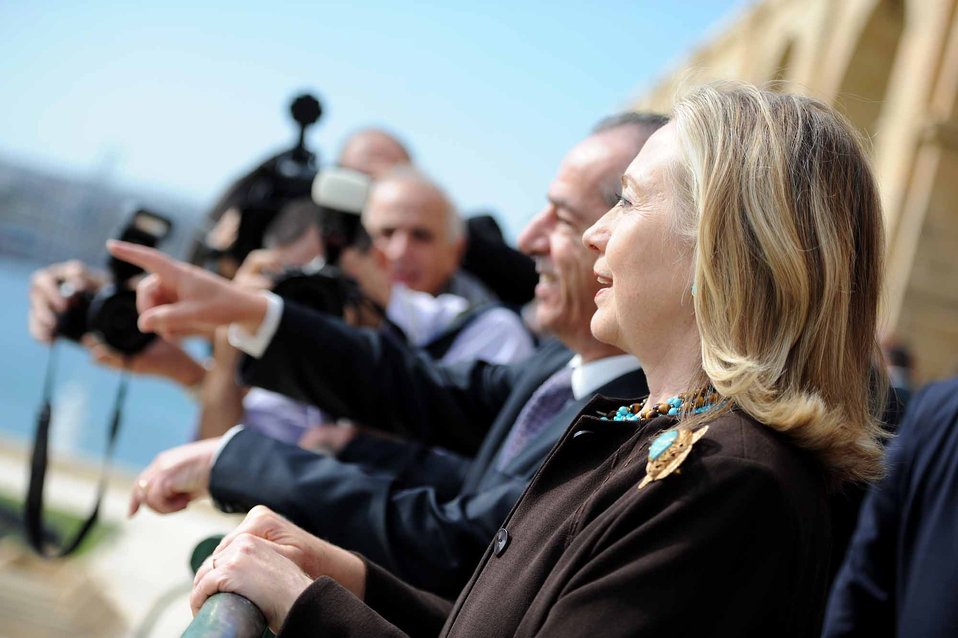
Secretary Clinton and Maltese Prime Minister Gonzi Visit the Upper Barrakka Gardens

U.S. Secretary of State Hillary Rodham Clinton and Maltese Prime Minister Lawrence Gonzi visit the Upper Barrakka Gardens in Valletta, Malta, on October 18, 2011.